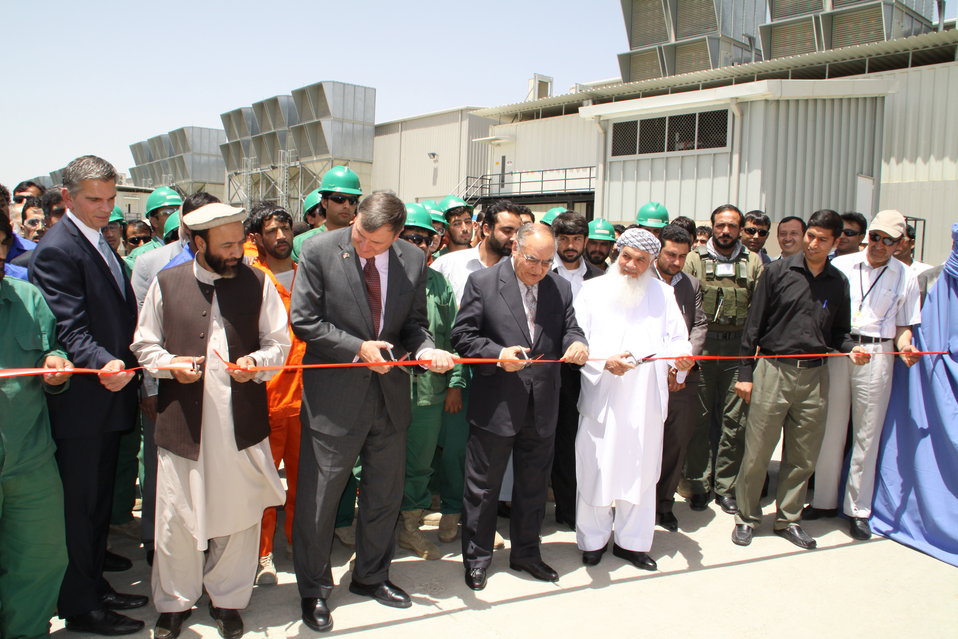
فابریکه برق طره خیل به حکومت افغانستان تسلیم داده شد